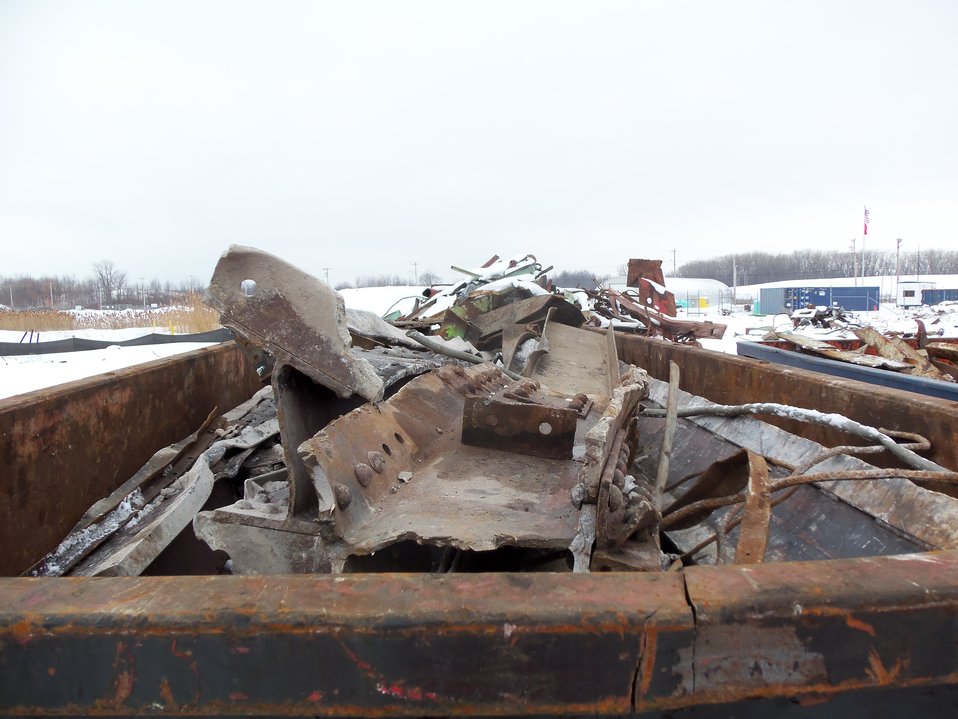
Debris pile loading to transport boxes.

Activities from the Niagara Falls Storage Site, which is associated with the former Lake Ontario Ordnance Works. Formerly Utilized Sites Remedial Action Program (FUSRAP), a program initiated in 1974 to identify, investigate and clean up or control sites that were part of the Nation's early atomic energy and weapons program. Activities at the sites that are eligible for FUSRAP were conducted by Manhattan Engineer District (MED) or the Atomic Energy Commission (AEC), both predecessors of the Department of Energy (DOE). The U.S. Army Corps of Engineers was assigned management of FUSRAP by Congress in 1997.